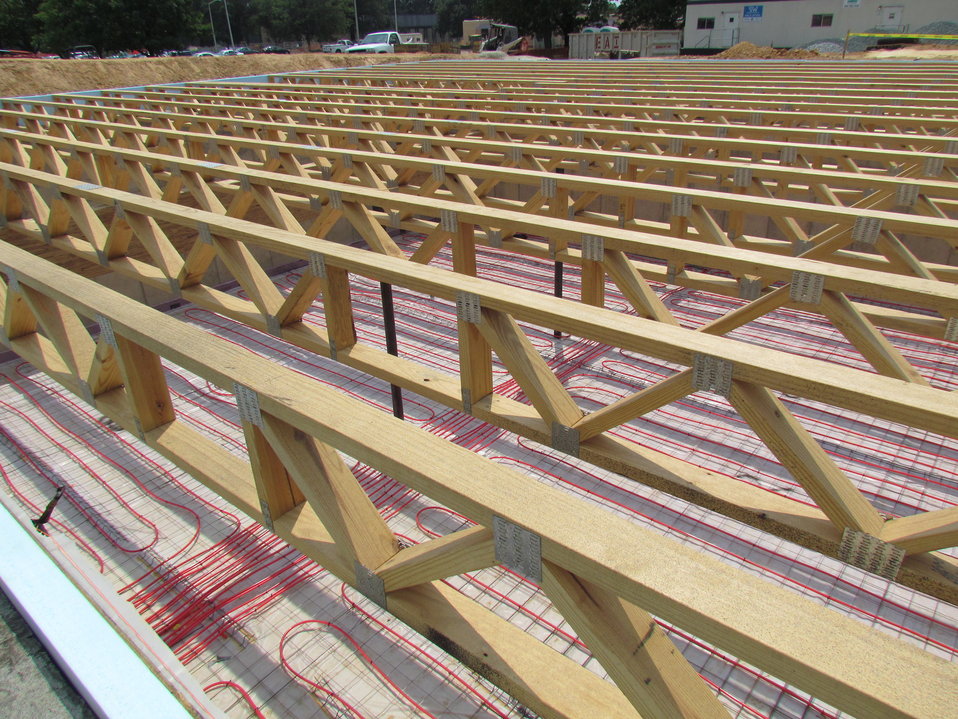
Net-Zero Energy Residential Test Facility - Construction photo looking down through open web floor trusses onto radiant tubing and basement slab insulation.